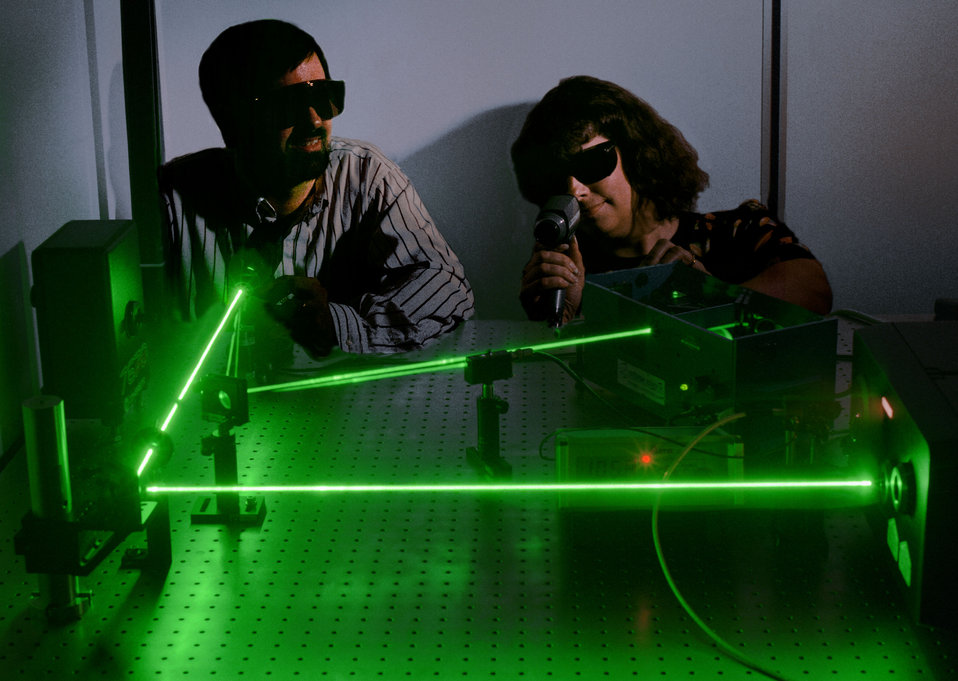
CEBAF Jefferson Lab Newport News

95 374 DOE photo by Lynn Freeny Newport News VA 8-24-1995